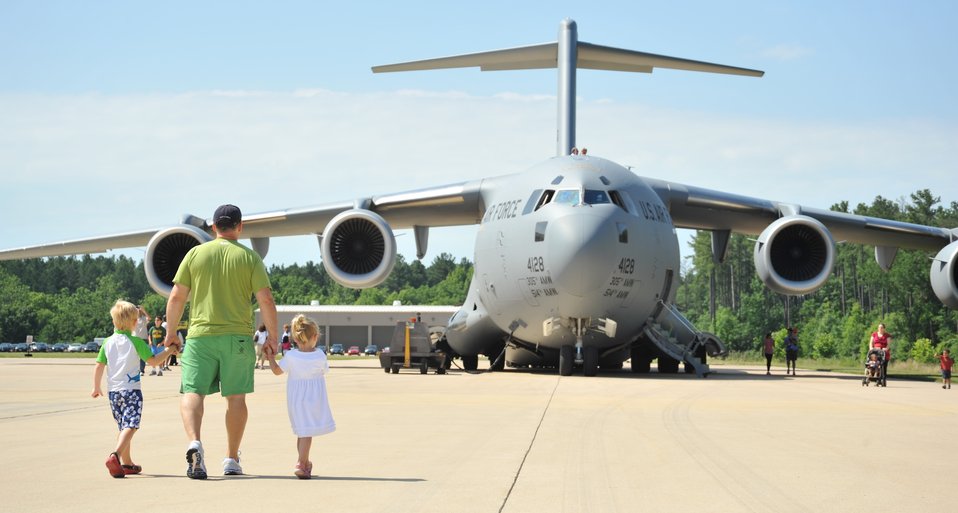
C-17 waiting for young pilots

A C-17 Globemaster of the 305th Air Mobility Wing is presented as a static display for